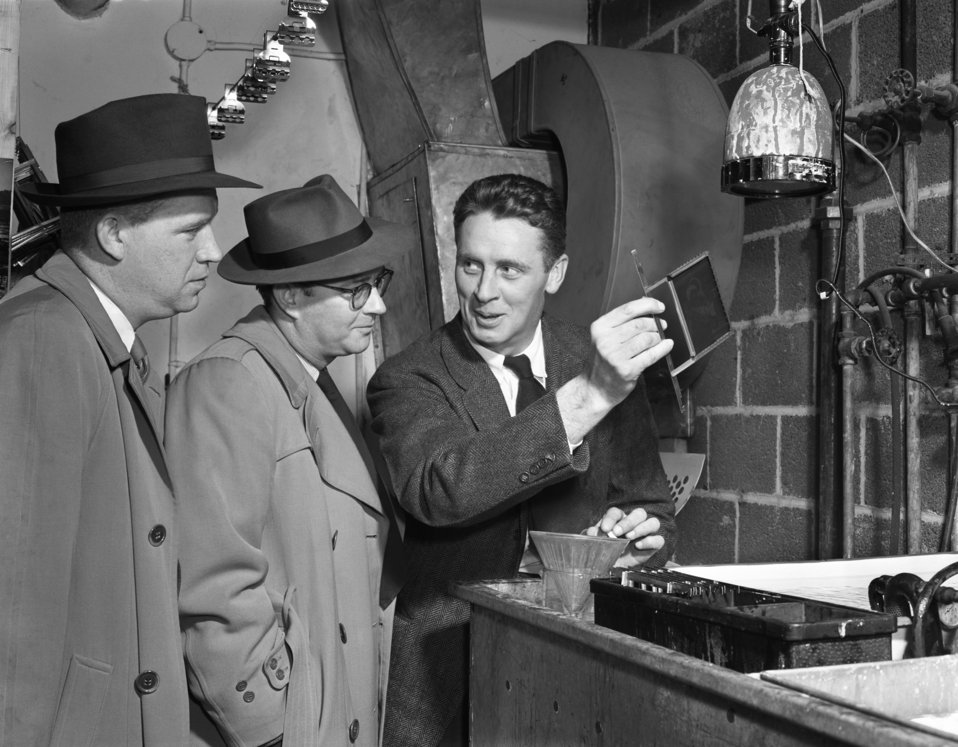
Darkroom Oak Ridge 1947

3324-1 DOE photo Ed Westcott 3-1-1947 L to R- G.O. Robinson, Larry Riordan and Photographer Oak Ridge Tennessee